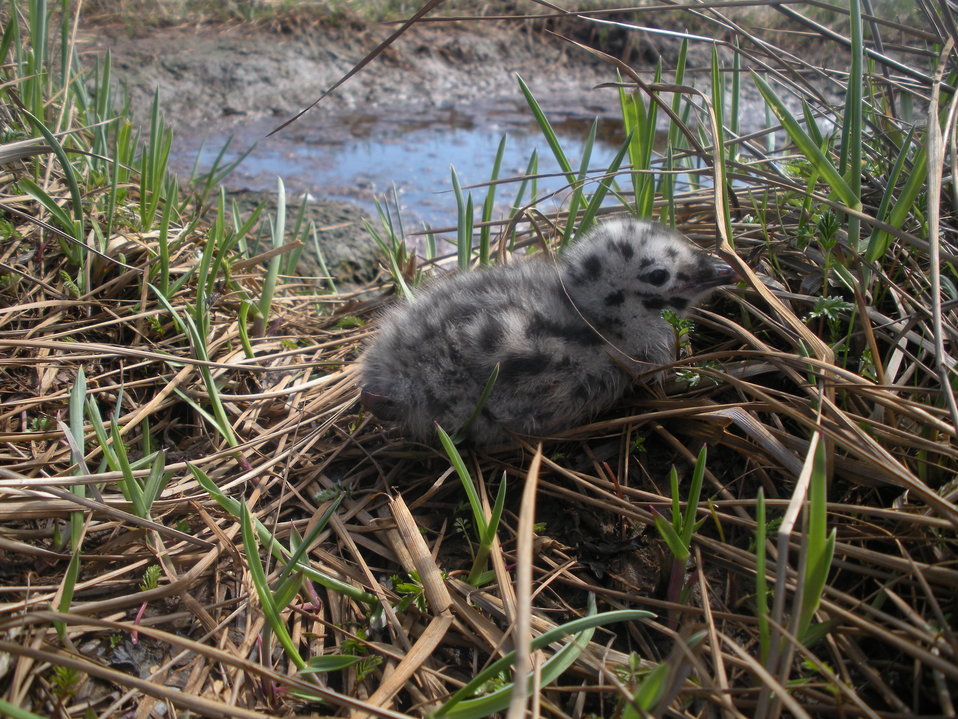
Gull chick

Yukon Delta NWR